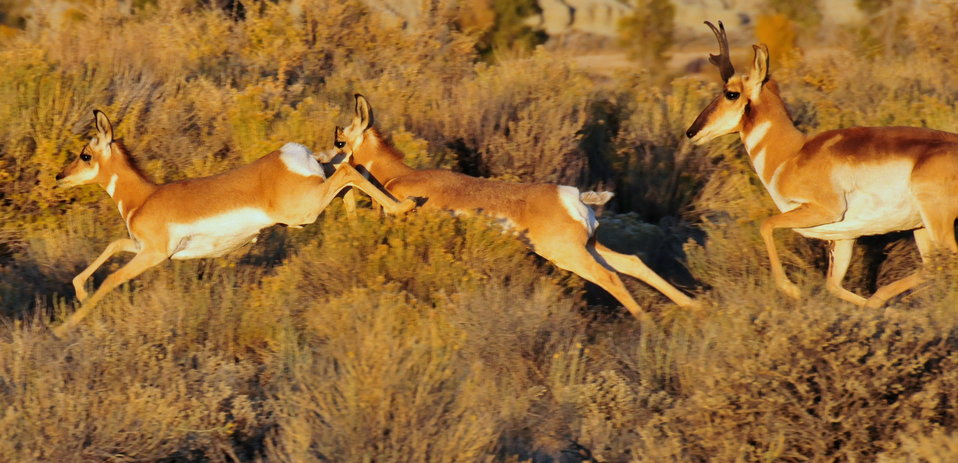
Pronghorn Buck and fawns Seedskadee NWR